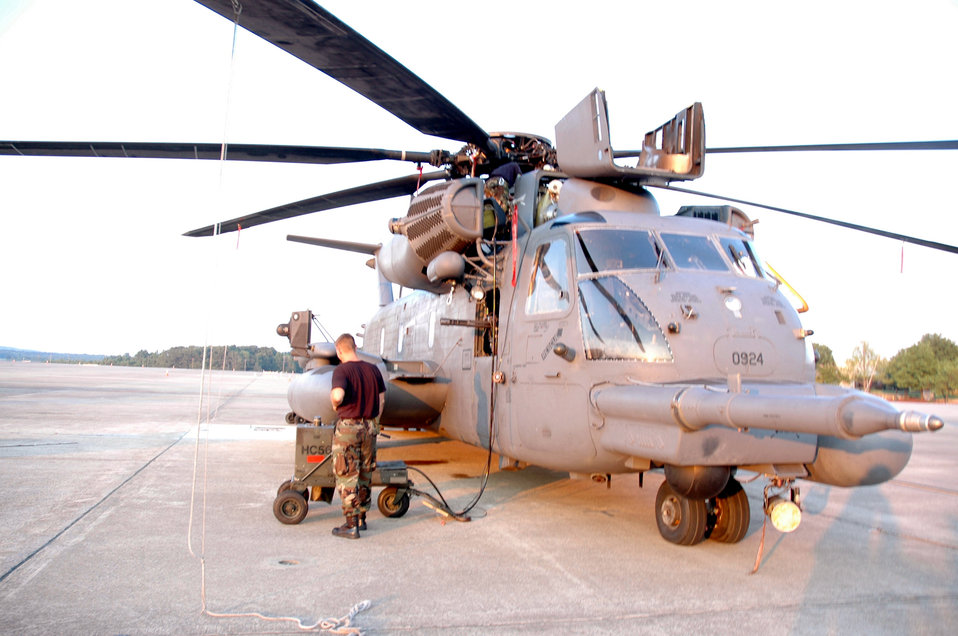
Arkansas 'paves' way for visitors

LITTLE ROCK AIR FORCE BASE, Ark. -- Staff Sgt. Jason Charpia pumps hydraulic fluid into an MH-53M Pave Low helicopter. Several aircraft from Hurlburt Field, Fla., were diverted here after an evacuation for Hurricane Dennis on July 8. Sergeant Charpia is assigned to the 16th Helicopter Maintenance Squadron at Hurlburt.